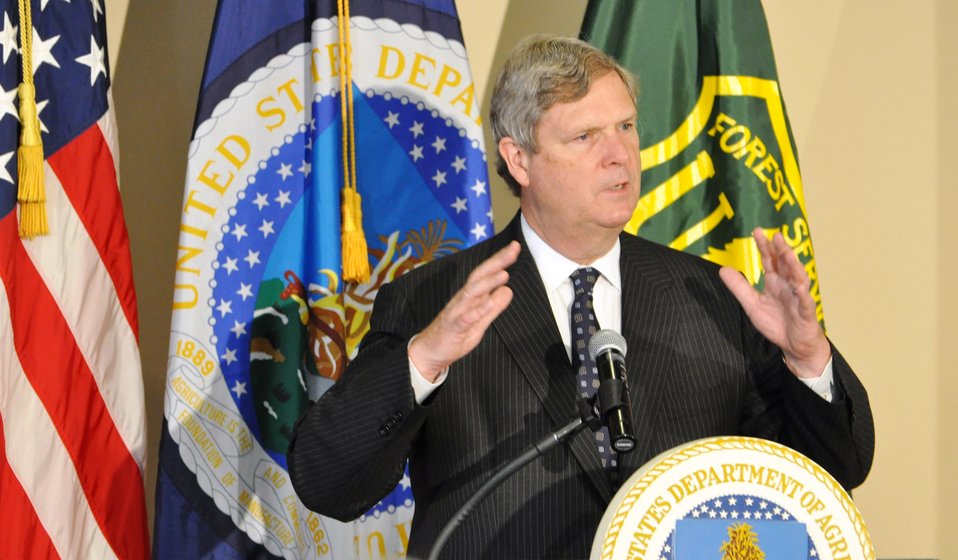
Agriculture Secretary Tom Vilsack addresses guests and press at the History of Colorado Center to announce action to combat insects and diseases that weaken forests and increase fire risk in Denver, CO on May 20, 2014.